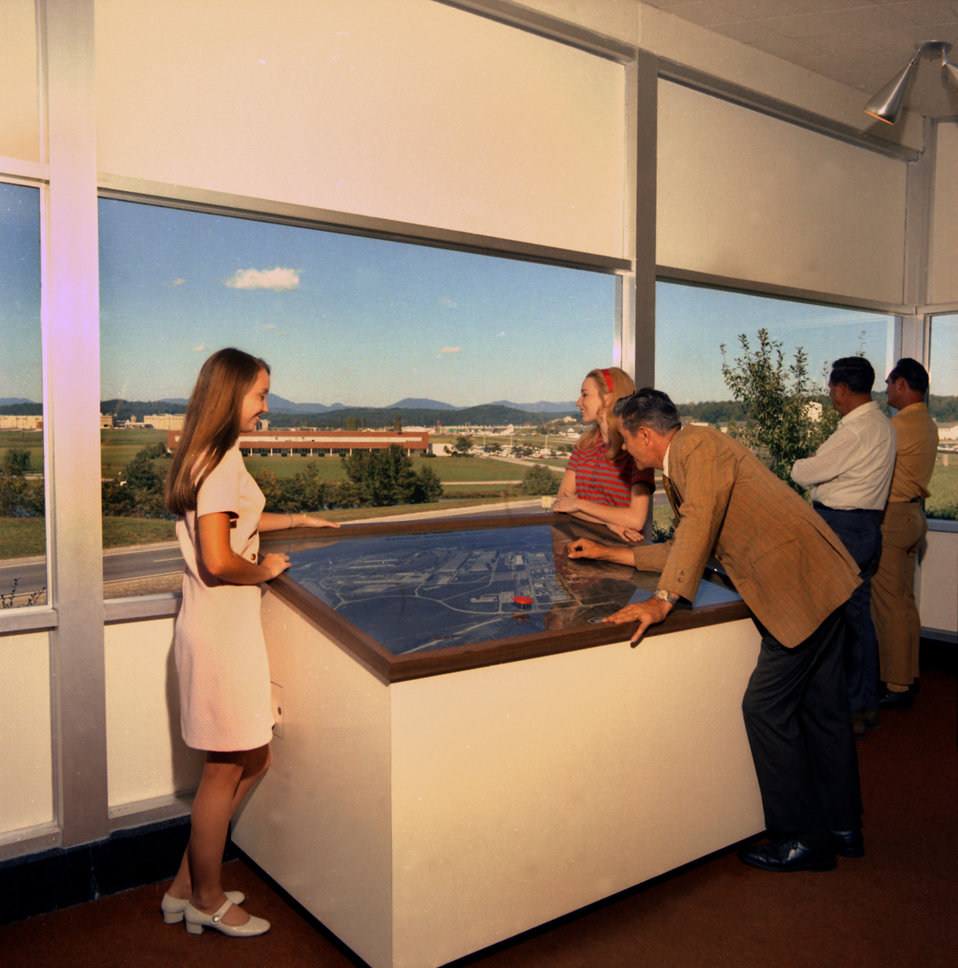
Overlook Visitors Center at ORGDP/ K-25

70-281-c DOE photo by Frank Hoffman
Overlook Visitors Center at K-25 ORGDP-(Oak Ridge Gasesous Diffusion Plant) Oak Ridge Tennessee 10-5-1970